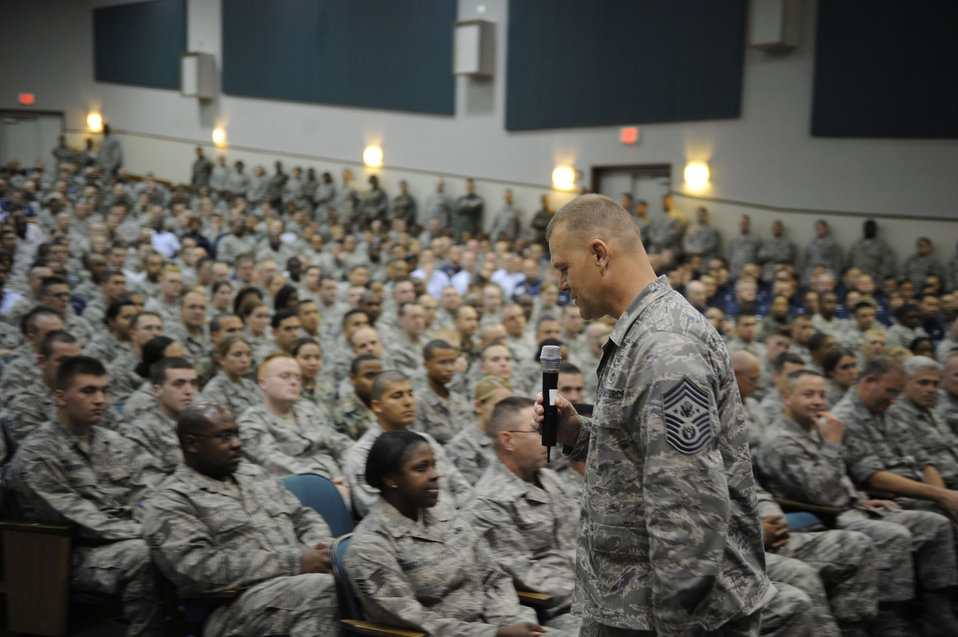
Top enlisted Airman visits Andrews Airmen

Chief Master Sgt. of the Air Force James A. Roy speaks with the enlisted force Oct. 7, 2009, at Joint Base Andrews Naval Air Facility Washington. Chief Roy and his wife, Paula Roy, spent the day visiting a variety of squadrons on base to speak with Airmen personally about his missions and goals as chief master sergeant of the Air Force. Chief Roy took time to respond to concerns from the enlisted corps ranging from the new physical training requirements to deployment taskings and the enlisted performance reports.